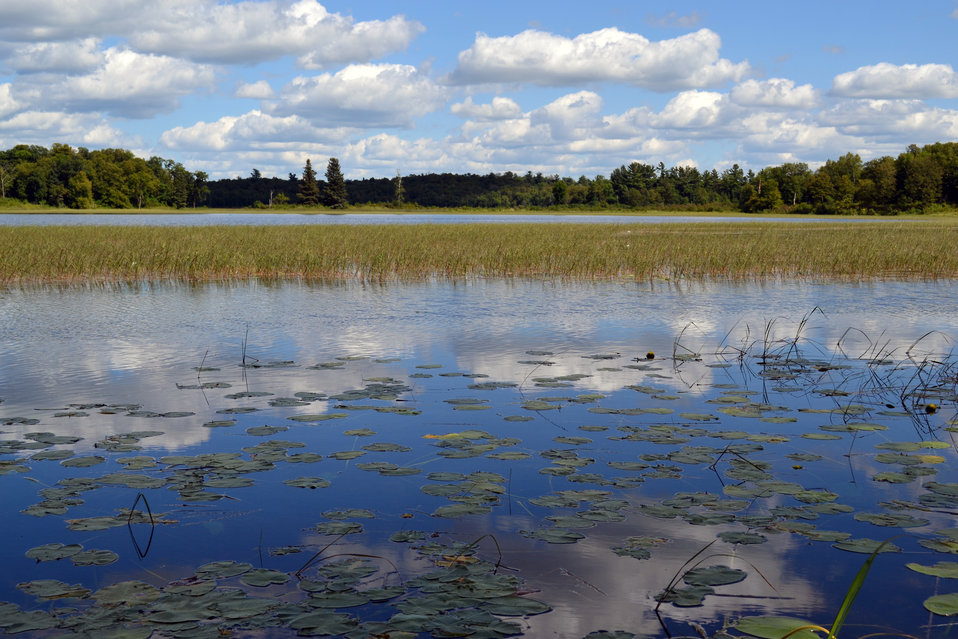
Blue Wetland